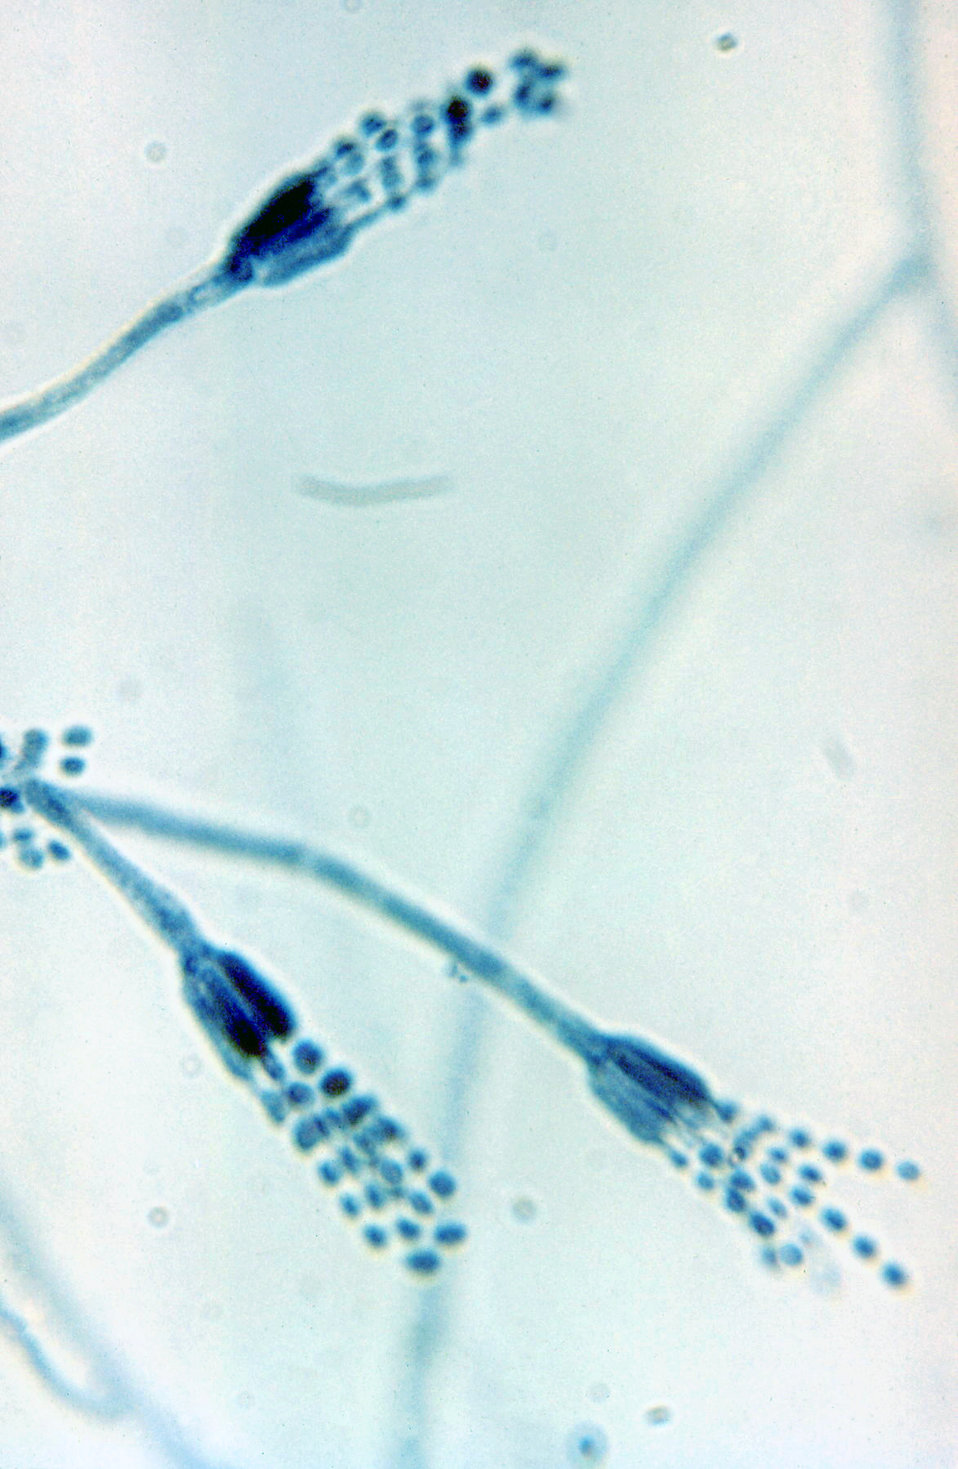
Magnified at 971x, this 1971 photomicrograph depicted a number of Penicillium glabrum conidiophores of a Penicillium glabrum fungus. The fungal conidiophore is a stalked structure, the distal end of which produces the asexual spores, known as conidia, through a process of budding. Conidia are apparent as very small round structures clustered like grapes at the end of these conidiophores.